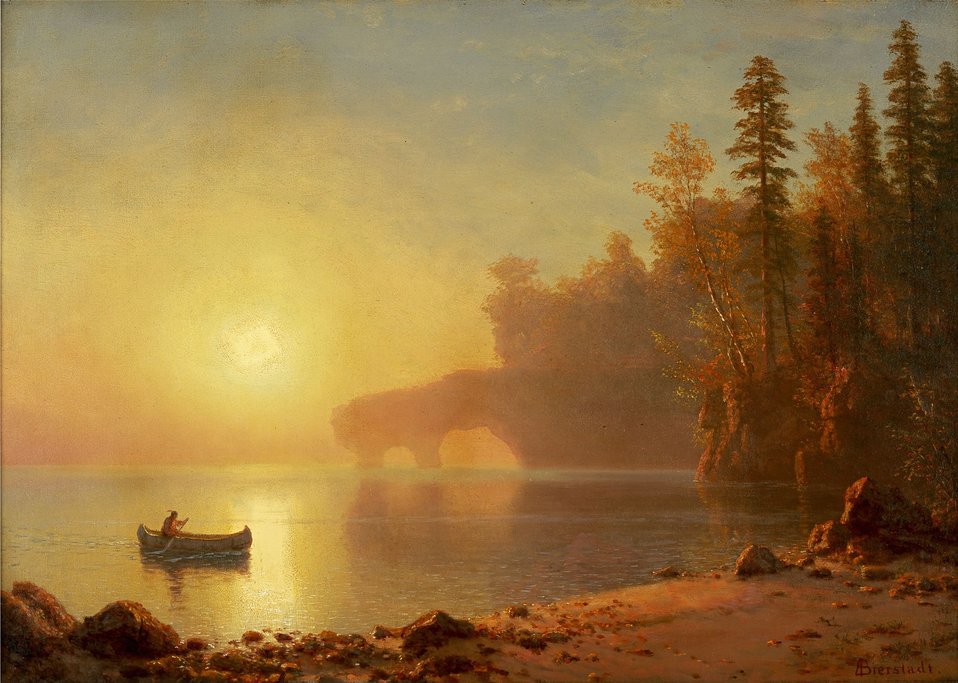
Albert Bierstadt - Indian Canoe